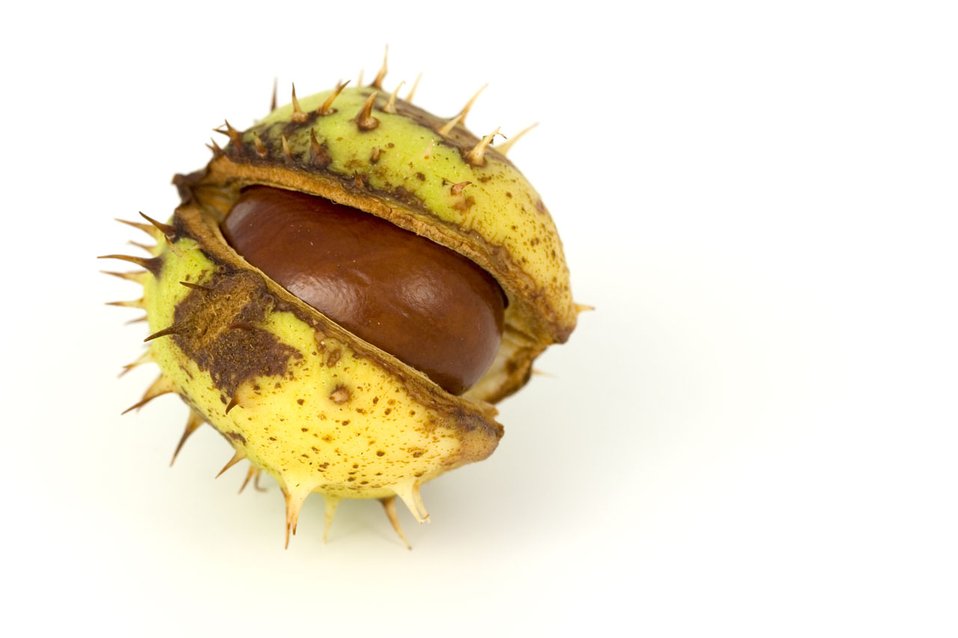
Conker

A single conker on white background.